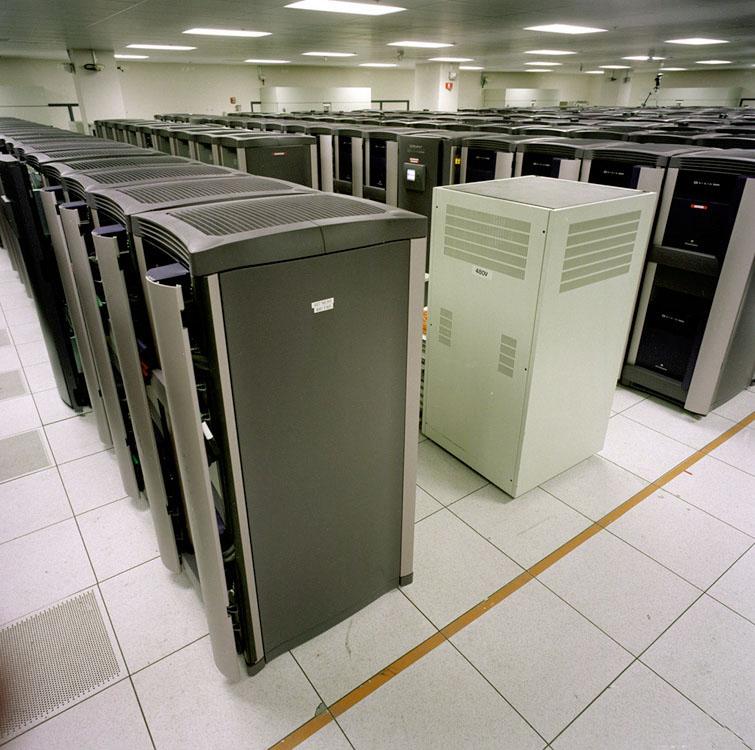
ASCII BLUE MOUNTAIN COMPUTER AT LOS ALAMOS NATIONAL LABORATORY.

LOS ALAMOS NATIONAL LABORATORY RANKS AS A WORLD LEADER IN COMPUTING RESEARCH. USING THE MOST ADVANCED MACHINES AVAILABLE, LANL IS EXPANDING UNDERSTANDING AND ACCOMPLISHMENTS OVER A BROAD SPECTRUM OF SCIENTIFIC KNOWLEDGE.